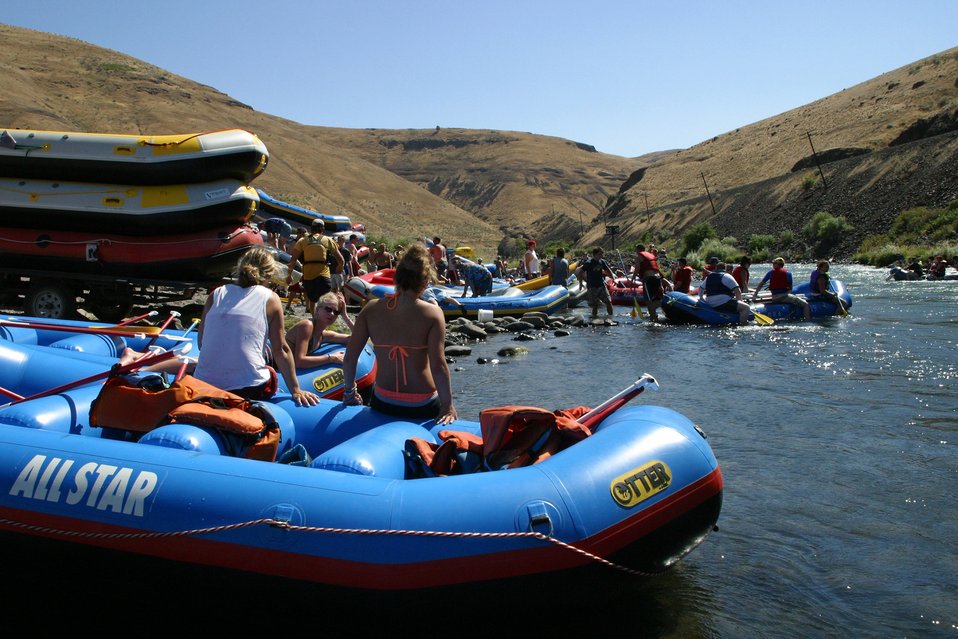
Sandy Beach is the last take out before Sherars Falls. All watercraft must exit the river!